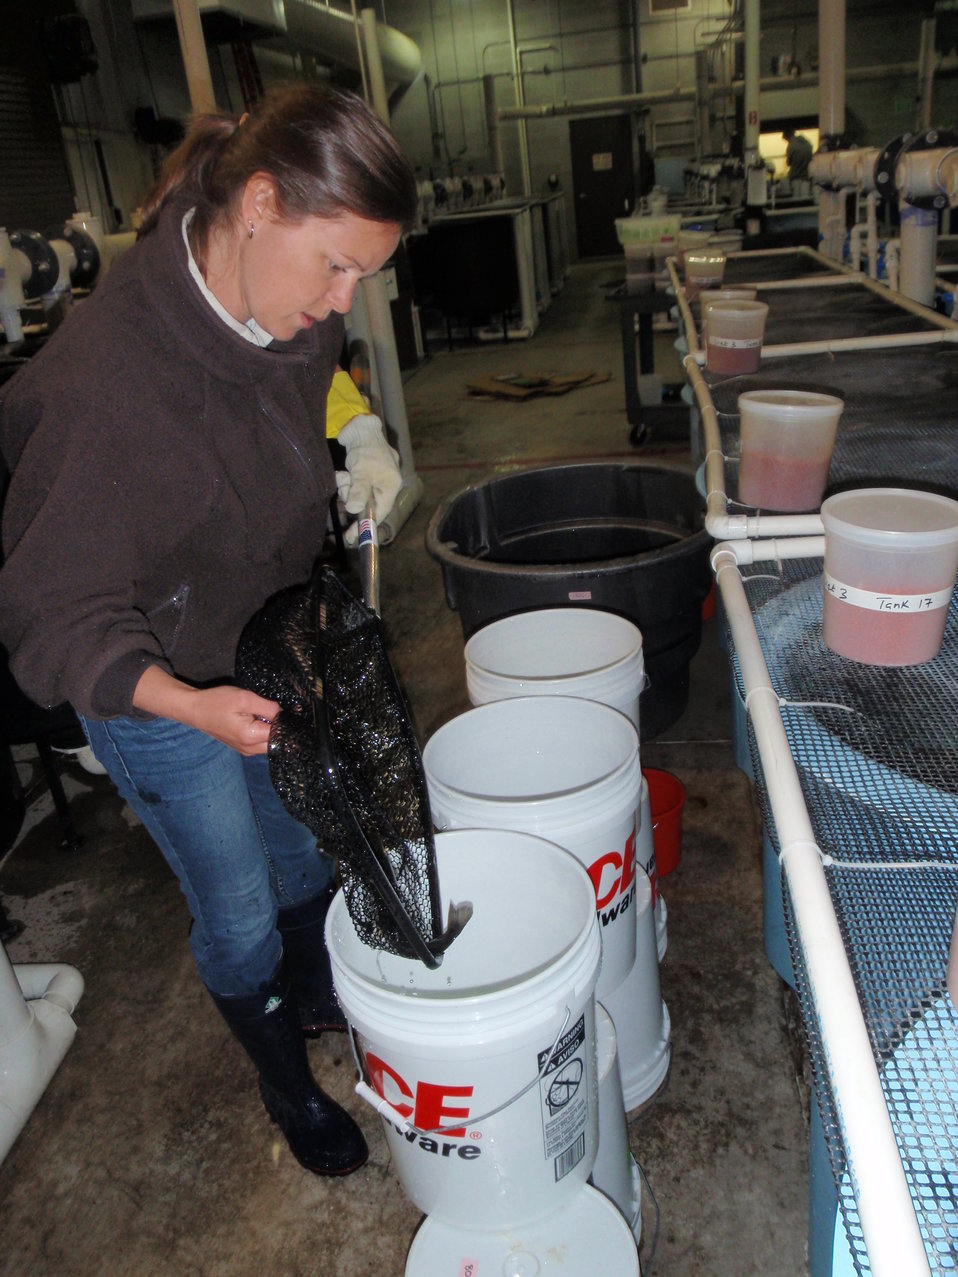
Niccole Wandelear netting fish into buckets of sedative solution at the Bozeman Fish Technology Center.

Rachel Carson Award for Scientific Excellence (Group) – 2013